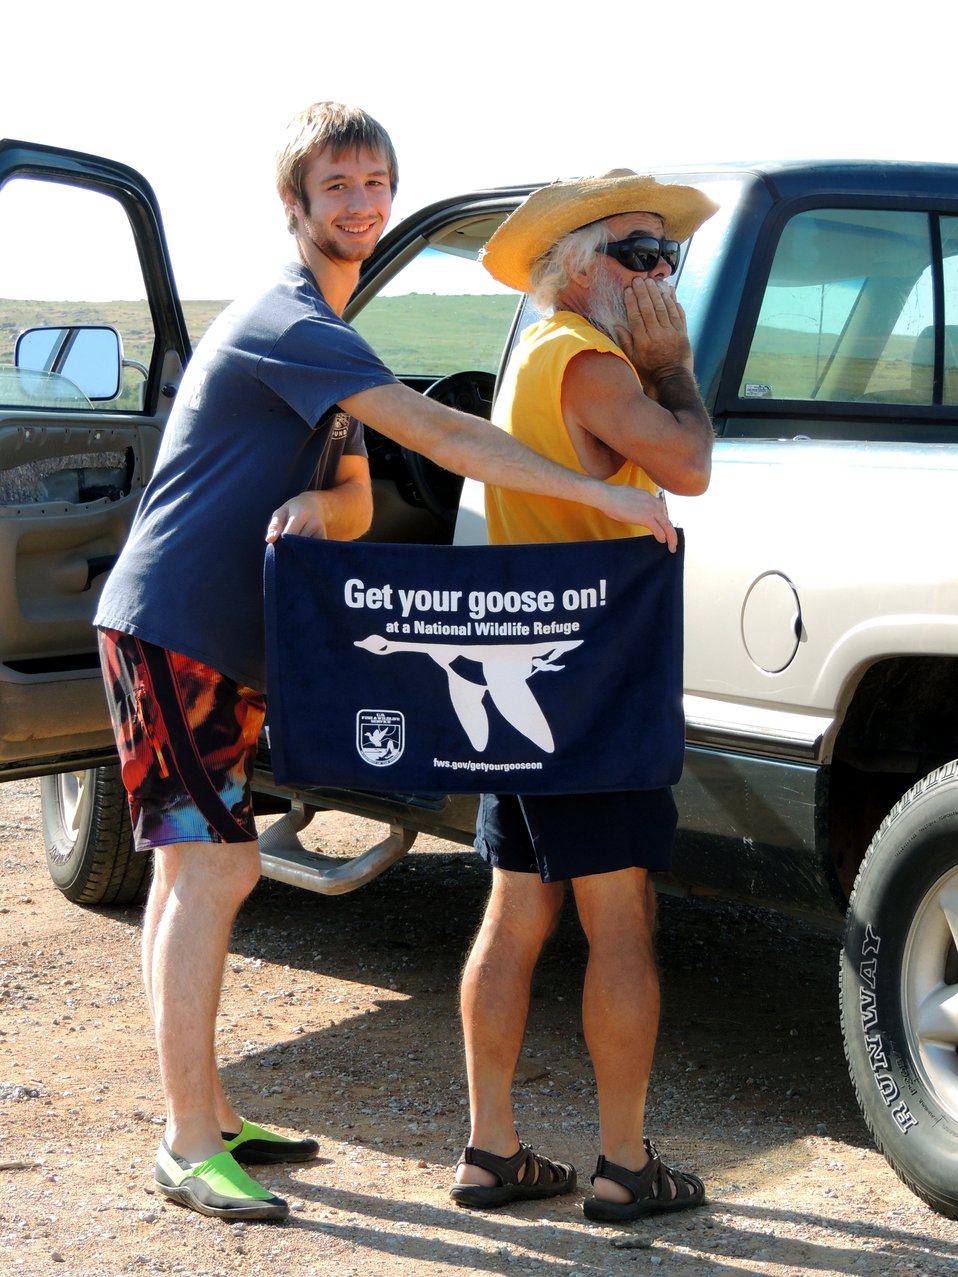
Get Your Goose On!

Wichita Mountains National Wildlife Refuge in Oklahoma.